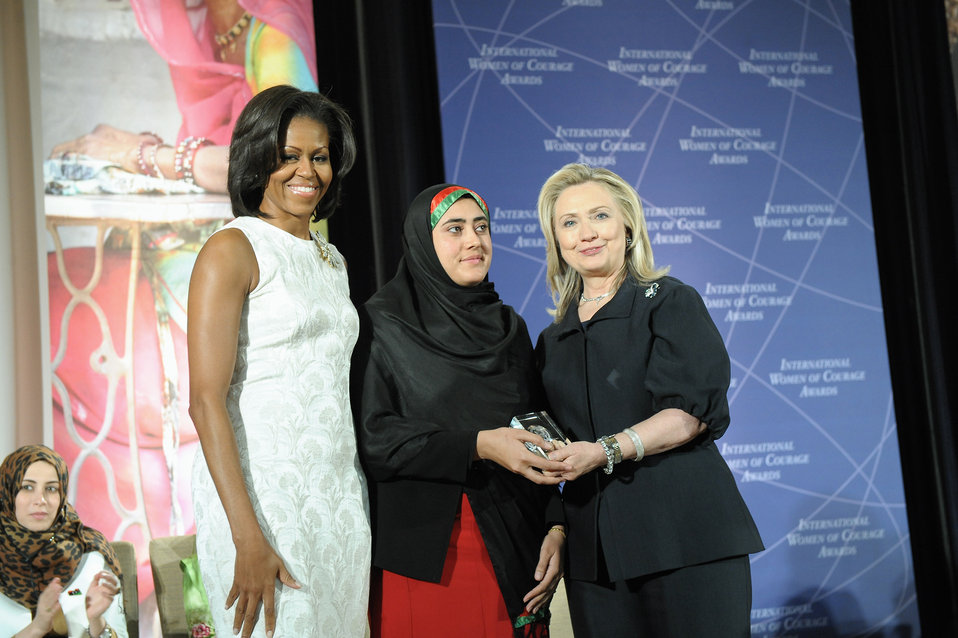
Secretary Clinton and First Lady Obama With 2012 IWOC Award Winner Maryam Durani of Afghanistan

U.S. Secretary of State Hillary Rodham Clinton, right; and First Lady Michelle Obama, left; pose for a photo with 2012 International Women of Courage (IWOC) Award Winner Maryam Durani of Afghanistan, at the U.S. Department of State in Washington, D.C., on March 8, 2012.